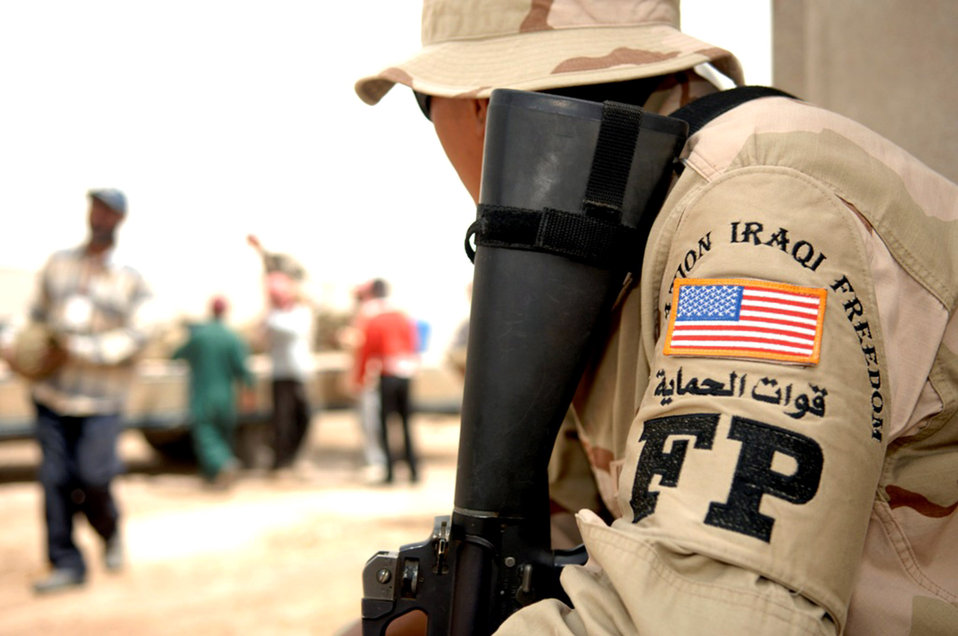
Keeping the compound safe

Airman 1st Class Christian Concepcion keeps a watchful eye on local nationals as they move sandbags on Ali Air Base, Iraq, to help fortify buildings in case of an attack. Airman Concepcion, a services specialist with the 99th Services Squadron at Nellis Air Force Base, Nev., is currently deployed working outside of his career field as a member of the 407th Expeditionary Security Forces Squadron's Force Protection Flight. FPF Airmen monitor local and third country nationals to detect suspicious activity, augment security forces during increased force protection conditions, and monitor and maintain installation security measures.